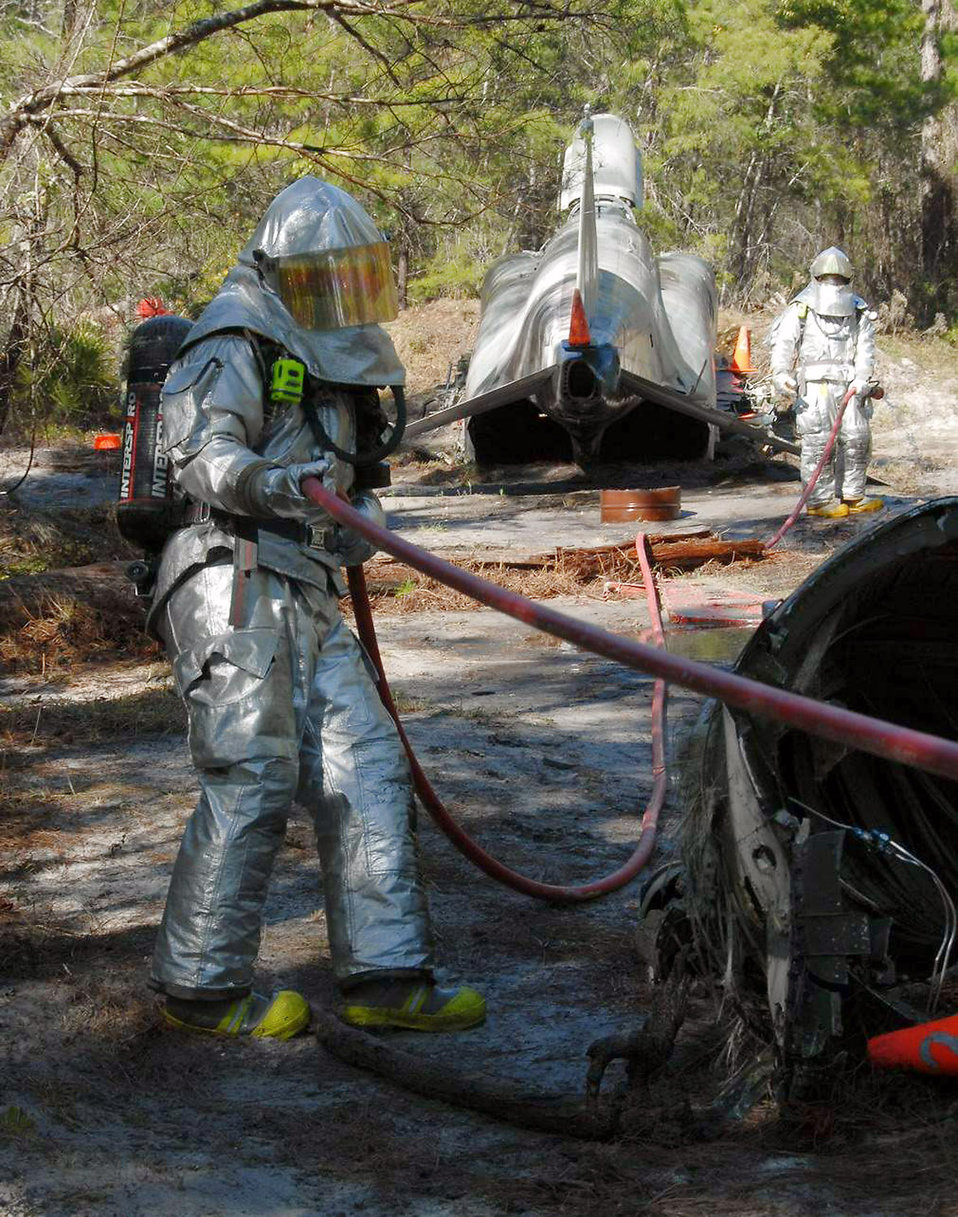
Silver Flag

A firefighter with the 104th Fighter Wing pulls a water hose from a fire truck during a Silver Flag exercise at Tyndall Air Force base, Fla., Feb. 5. Silver Flag is training for Air Force members to learn new skills in a simulated combat environment.